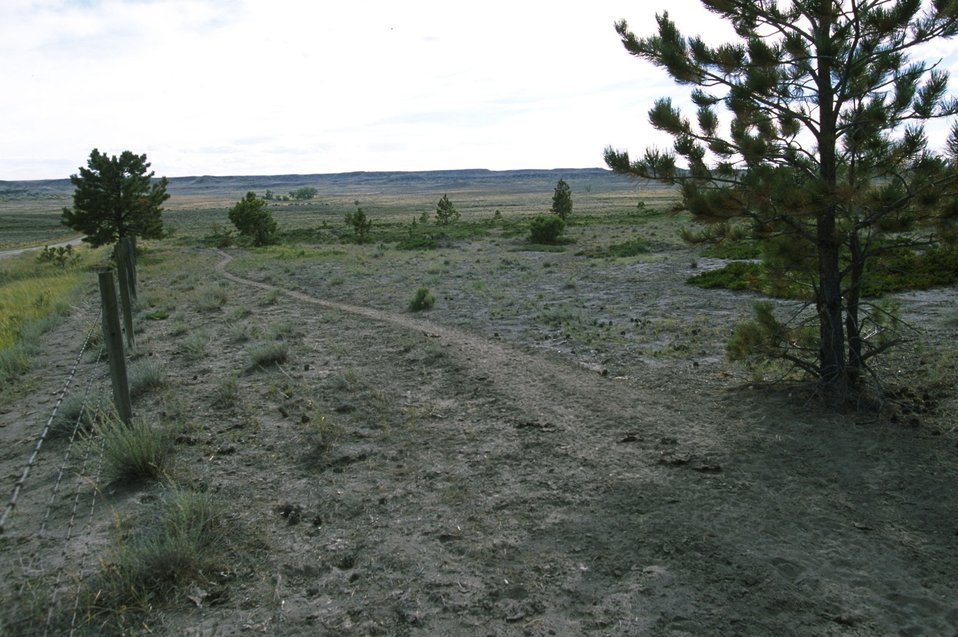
Acid Shale Area of Critical Environmental Concern (ACEC)